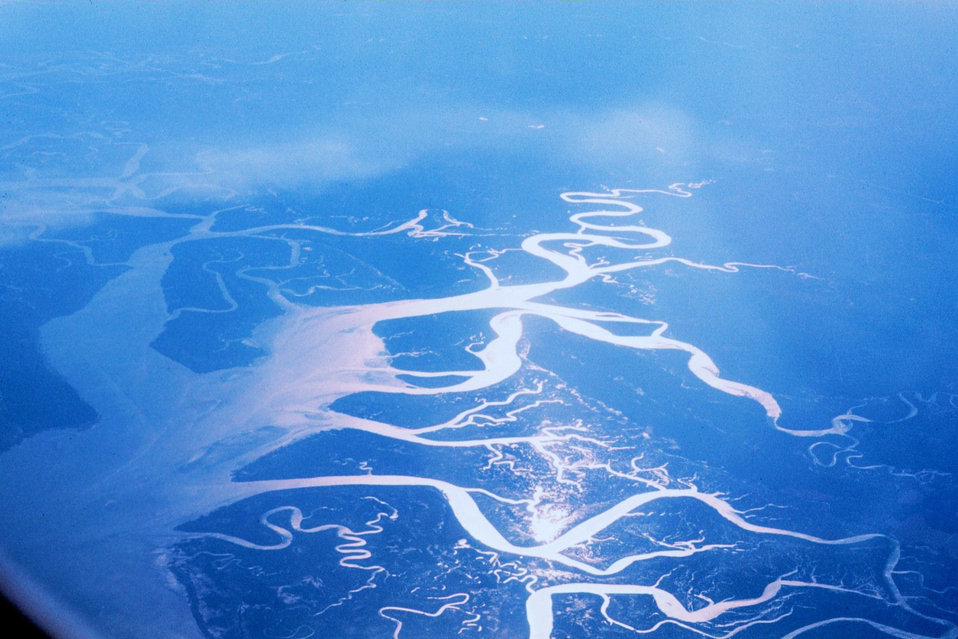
The tidewater streams of Charleston illuminated in the late afternoon sun